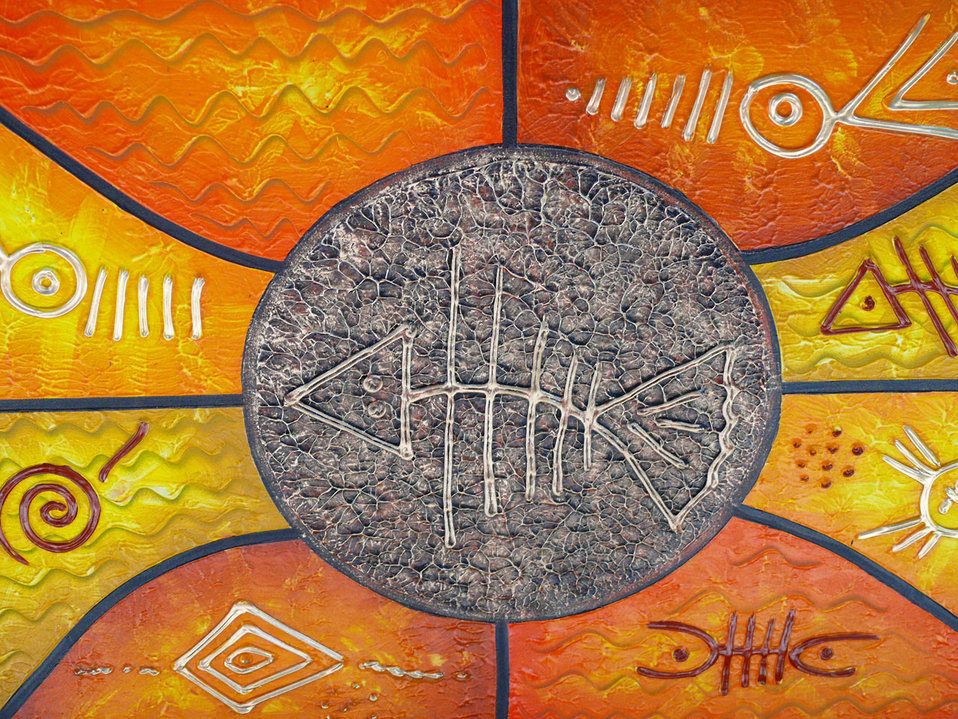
Art

Dominican art.